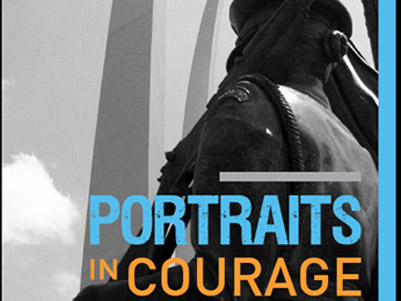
Portraits in Courage Vol 4

The